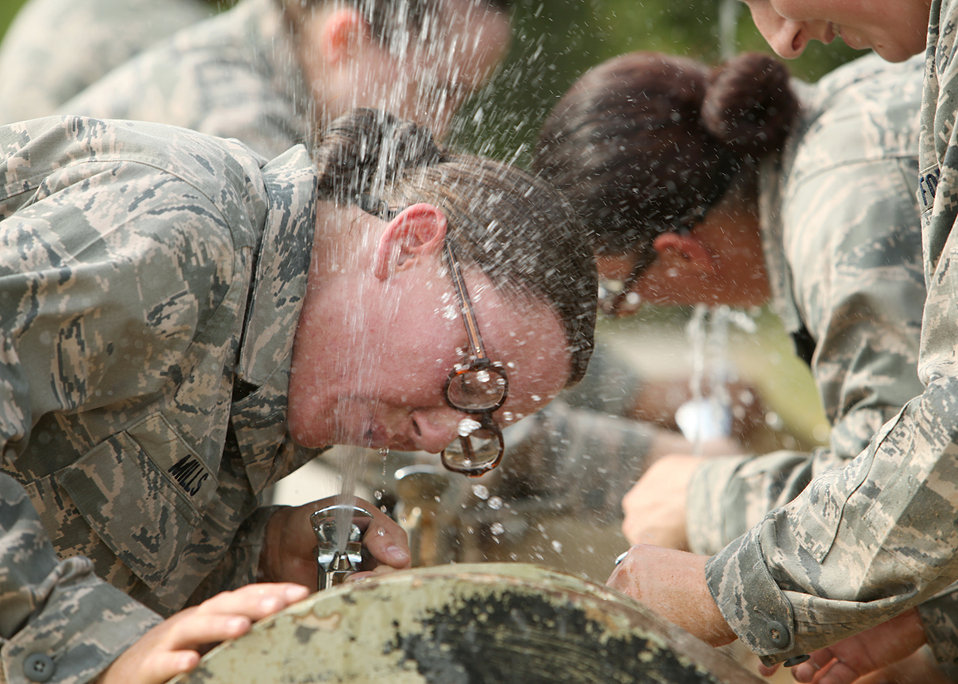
Trainees take on confidence course

Basic Military Training trainees take a break for water while completing the confidence course June 30, 2010, at Lackland Air Force Base, Texas. In BMT, trainees learn the critical importance of discipline, teamwork and knowledge needed to succeed as an Airman.